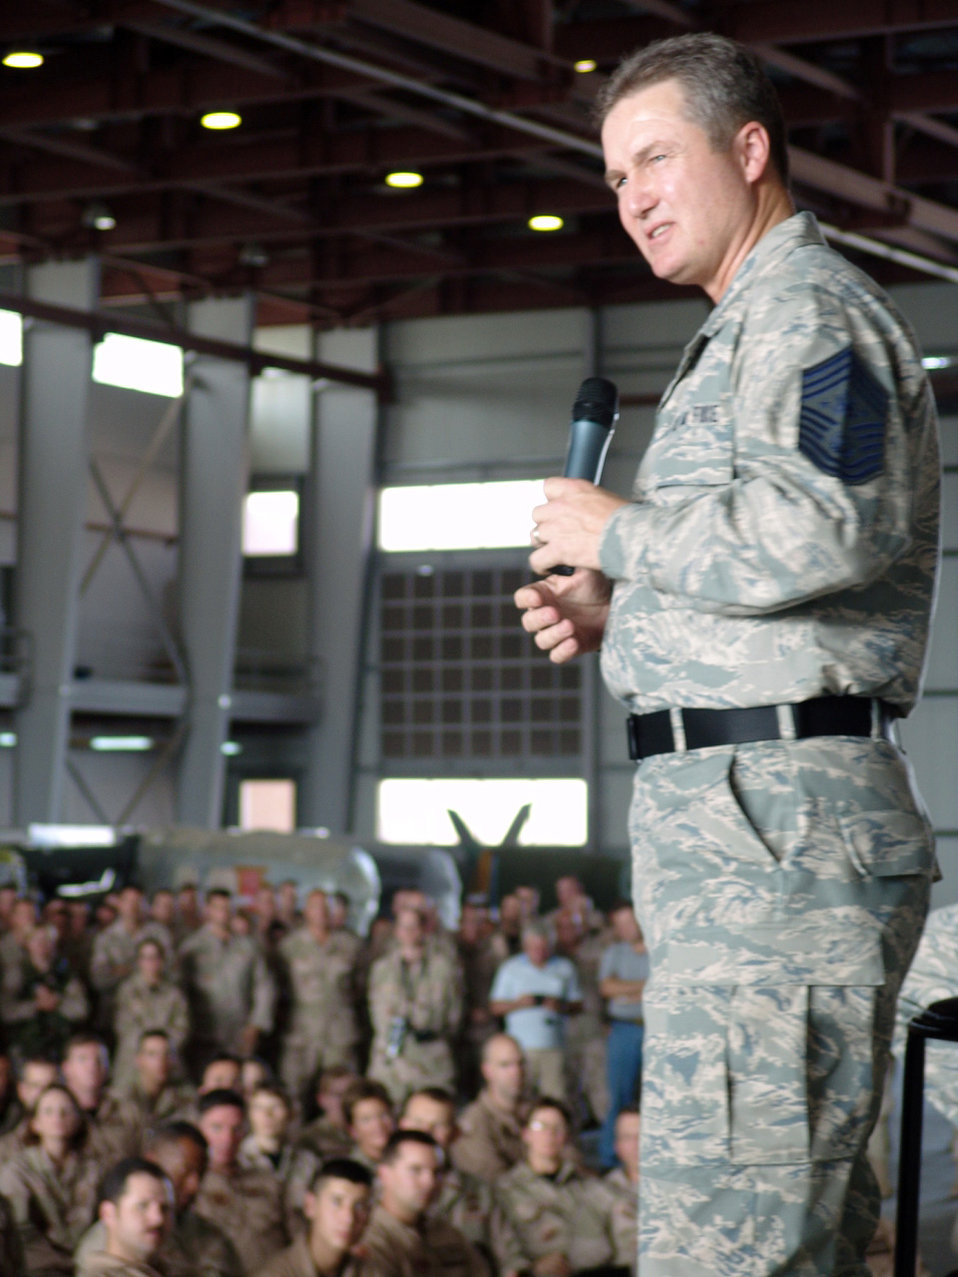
Fashion statement

SOUTHWEST ASIA -- Chief Master Sgt. of the Air Force Gerald R. Murray listens to a question during a troop-call at a forward-deployed location Nov. 8. Secretary of the Air Force Dr. James G. Roche, Chief of Staff Gen. John P. Jumper and Chief Murray are touring bases in Southwest Asia while wearing the new version of the proposed utility uniform.